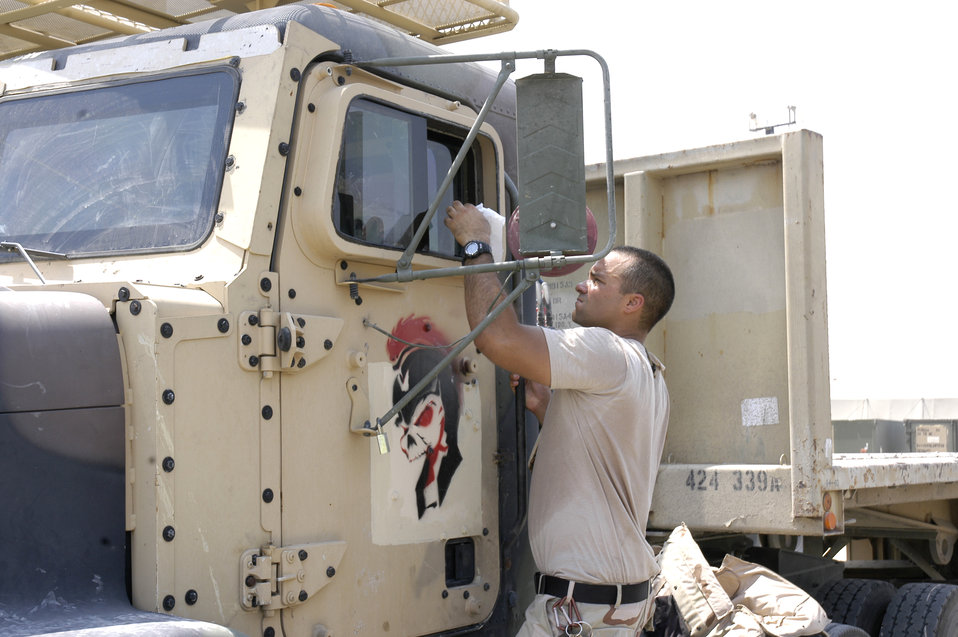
Convoy Airmen face challenging duties

Senior Airman Darren Percy cleans the windows of his truck before rolling out on a convoy mission. Airman Percy is a vehicle operator with the 424th Medium Truck Detachment.